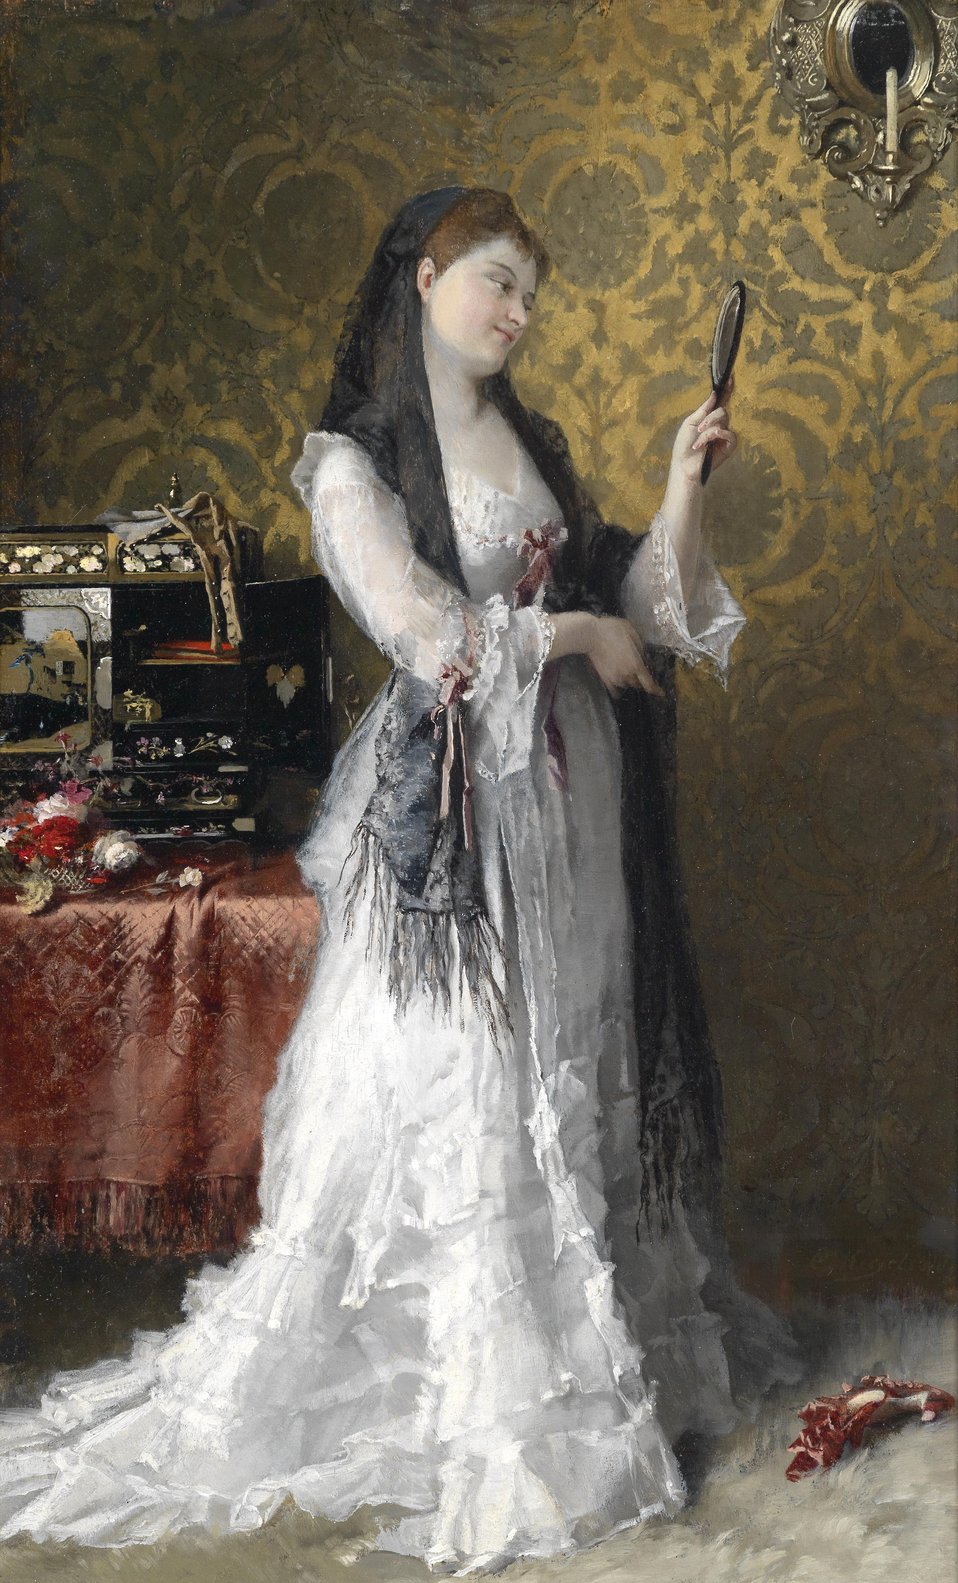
Dame im Boudoir, signiert, bezeichnet C. Kiesel Ddf., Öl auf Holz, 44 x 26,5 cmmittig rest. Sprungbildung,